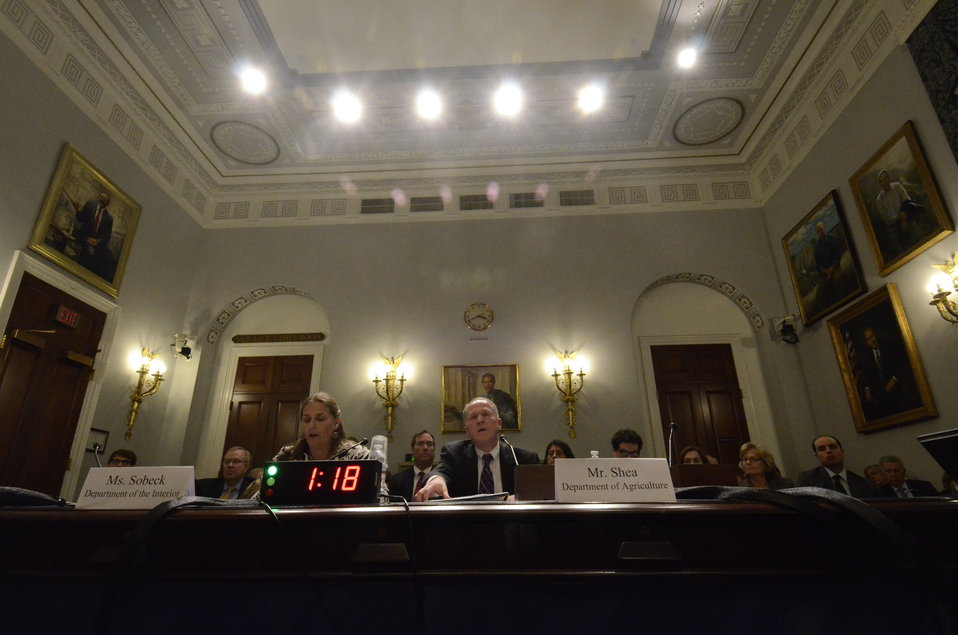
Interior Department Deputy Assistant Secretary for Fish and Wildlife and Parks Eileen Sobeck and Agriculture Department Animal Plant and Health Inspection Service (APHIS) Associate Administrator Dr. Kevin Shea speaking on Retailers & Entertainers Lacey Implementation & Enforcement Fairness Act & Freedom from Over-Criminalization & Unjust Seizures Act at the Longworth House Office Building in Washington, D.C. on Tuesday, May 8, 2012.